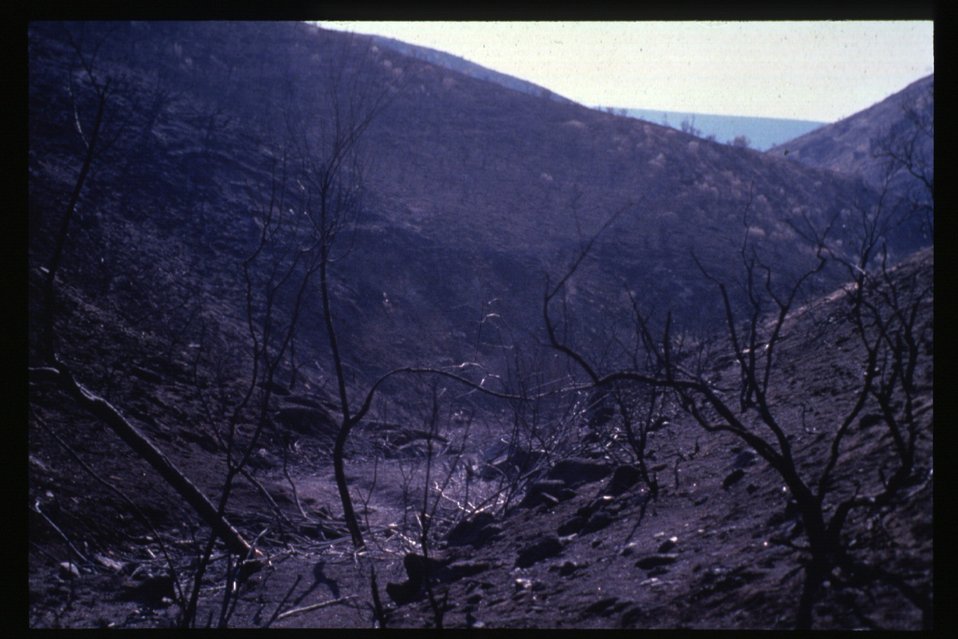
8th Street Fire Burnt area Four Rivers Field Office LSRD Lower Snake River District